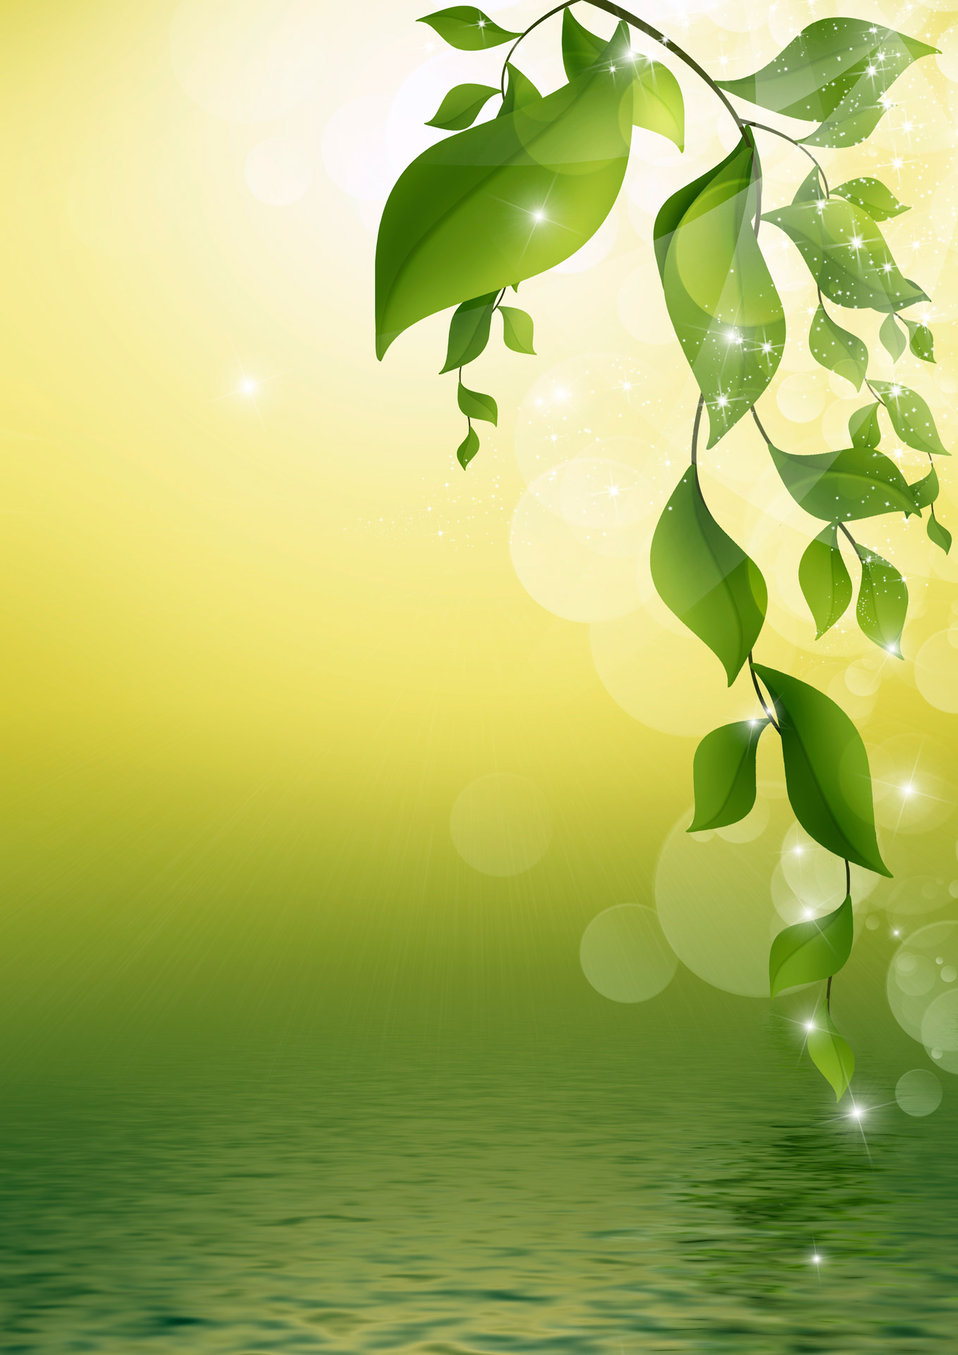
Background with green leaves

Warm background with a branch with green leaves..